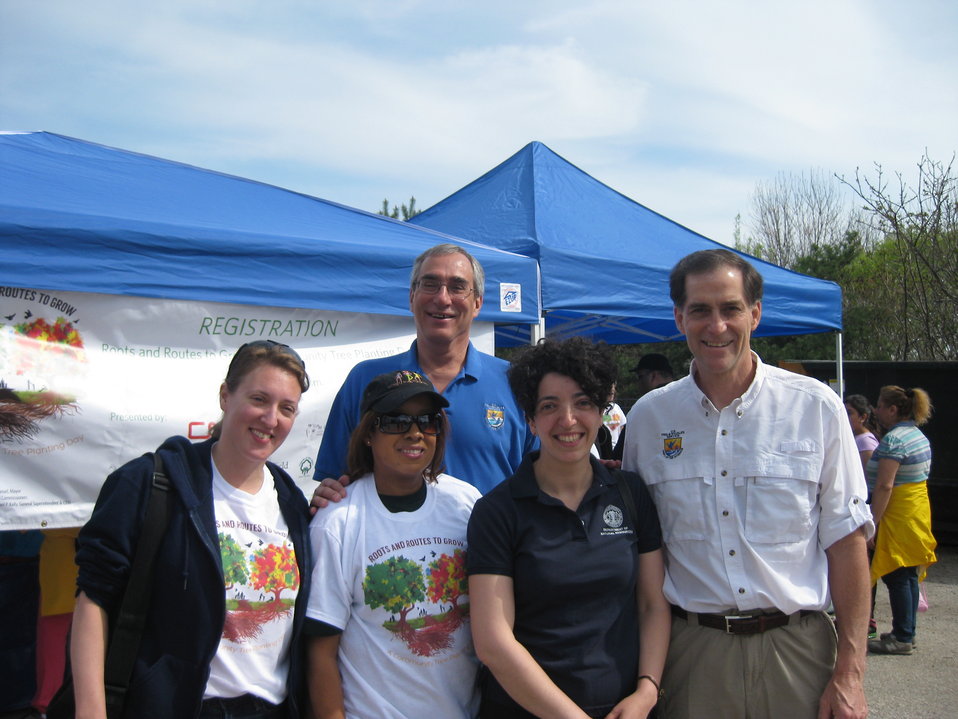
FWS Director Dan Ashe, R3 RD Tom Melius with Chicago Park District staff ZhannaYermakov and Cathy Breitenbach

Chicago Park District Burnham Corridor Community Planting Day
May 10, 2014
Photo by USFWS; Louise Clemency